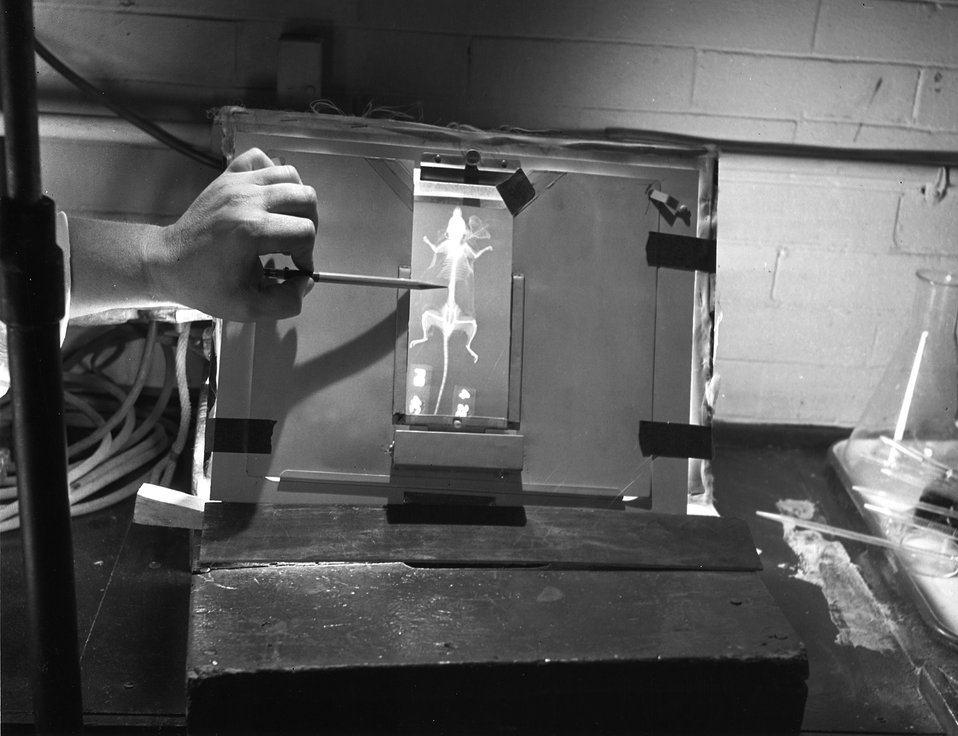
Close-up of biologists hand pointing to a skelital x-ray showing an osteogenic sarcona (bone cancer) located on the second lumbar vertebrae of a mouse.
c.1953